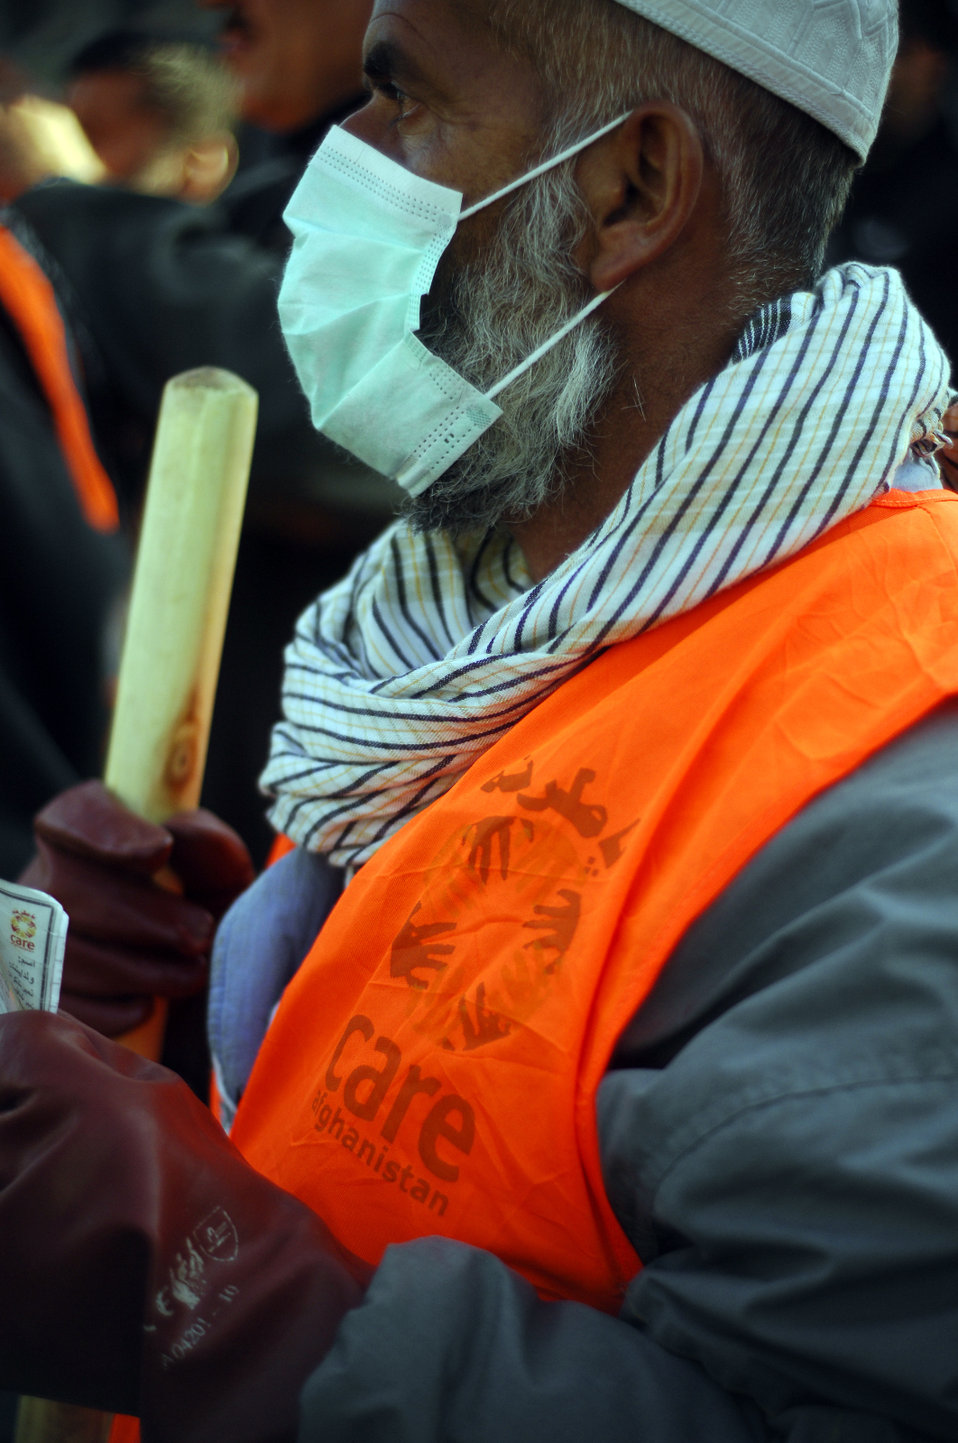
Care27